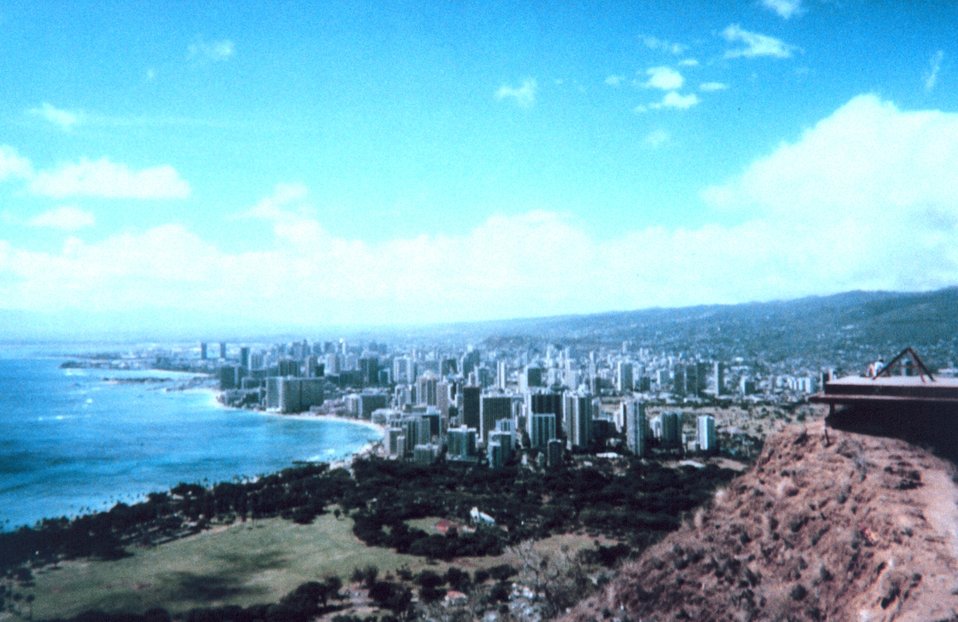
Honolulu as seen from Diamond Head looking west.